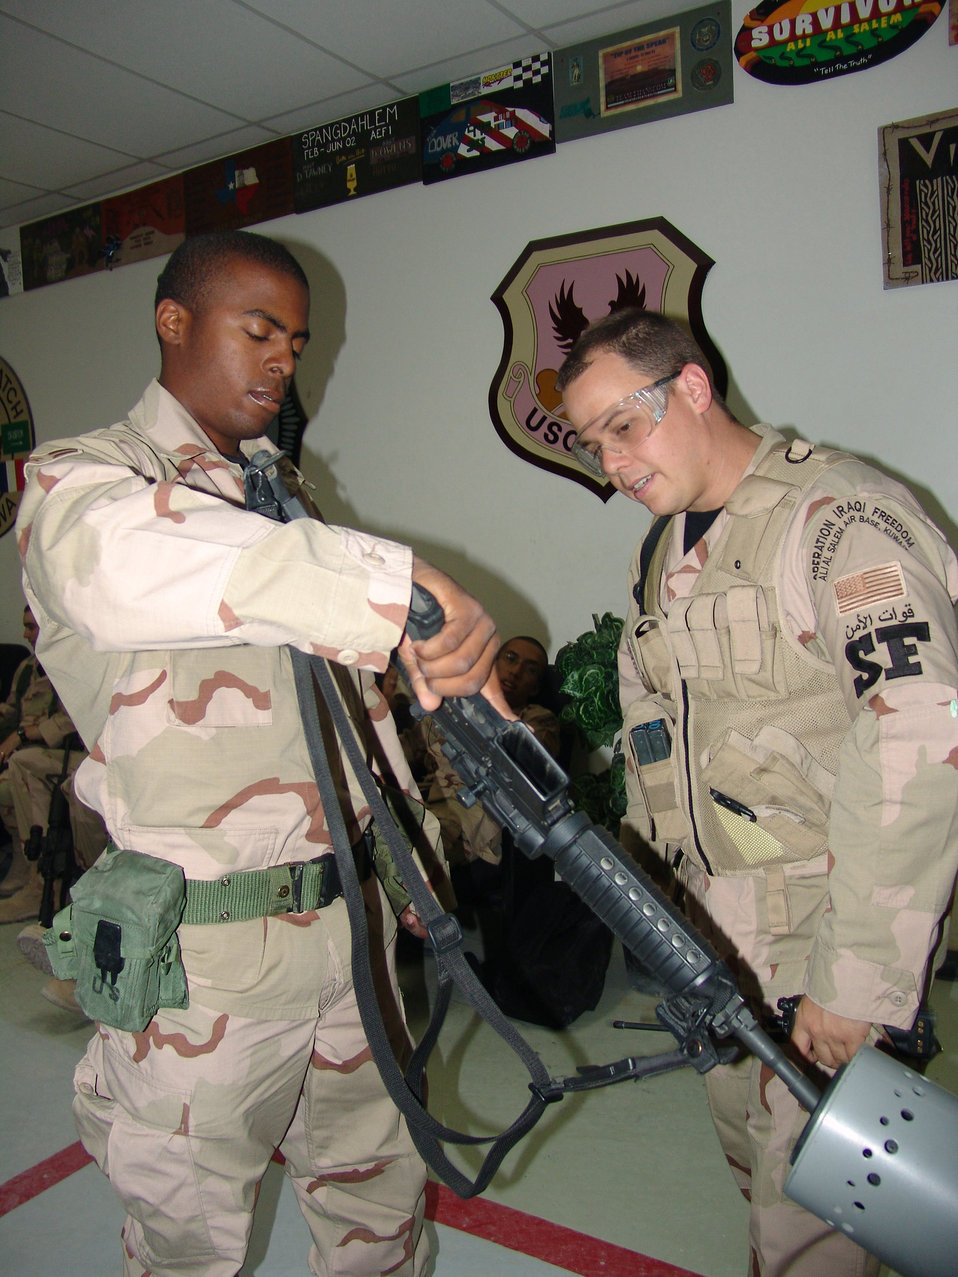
Operation Iraqi Freedom

SOUTHWEST ASIA -- Airman 1st Class Terrance Best (left) shows Staff Sgt. Joseph Chappel his rifle is clear of ammunition. They are assigned to the 386th Expeditionary Security Forces Squadron supporting Operation Iraqi Freedom at a forward-deployed location. Airman Best is from Ramstein Air Base, Germany, and Sergeant Chappel is from Lackland Air Force Base, Texas. The 386th ESFS Airmen are responsible for air base ground defense and security for the 386th Air Expeditionary Wing.